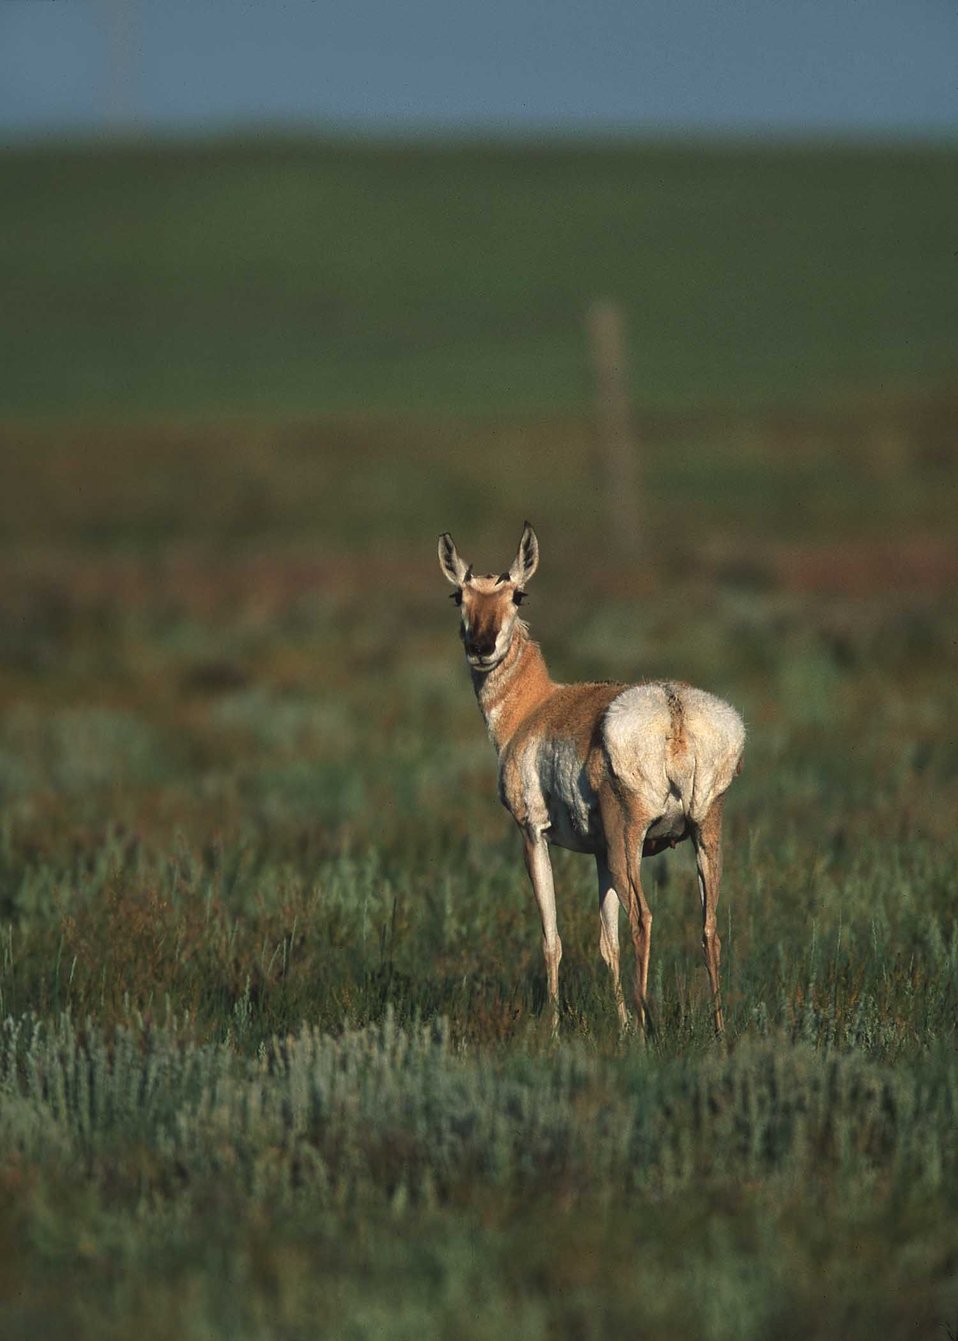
Pronghorn Antelope on Pawnee Grassland.